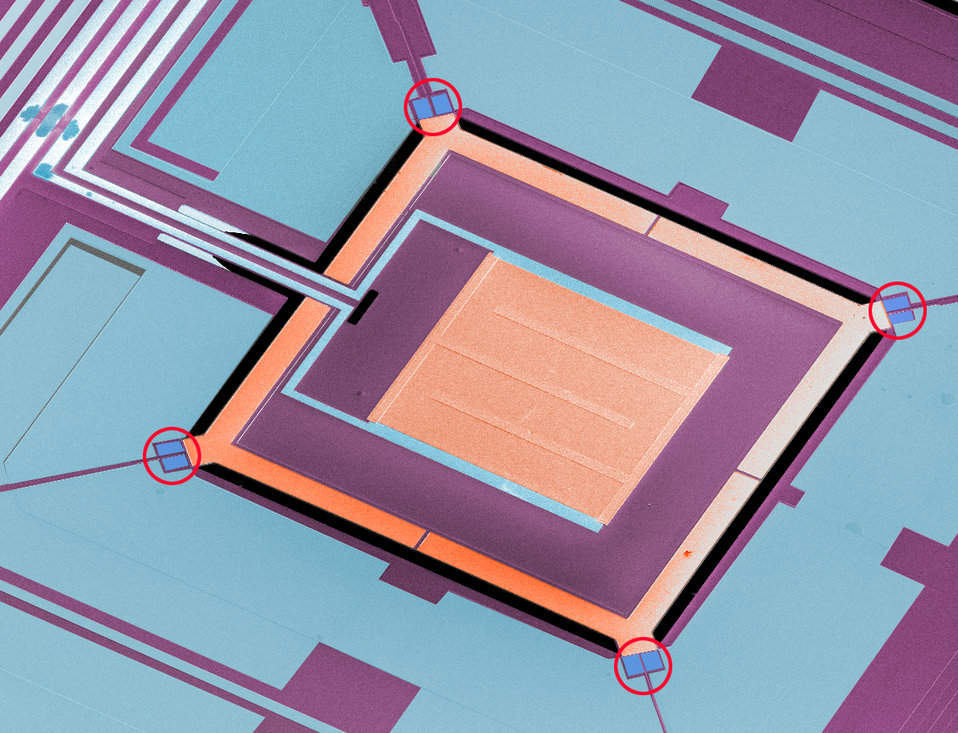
NIST Micro Sensor and Micro Fridge Make Cool Pair

Colorized micrograph of a NIST chip combining four micro-refrigerators (circled in red) with a superconducting sensor (large orange square in the middle). The self-cooling chip could be used for applications ranging from detailed X-ray analysis of semiconductors to detection of microwave signals in deep space.